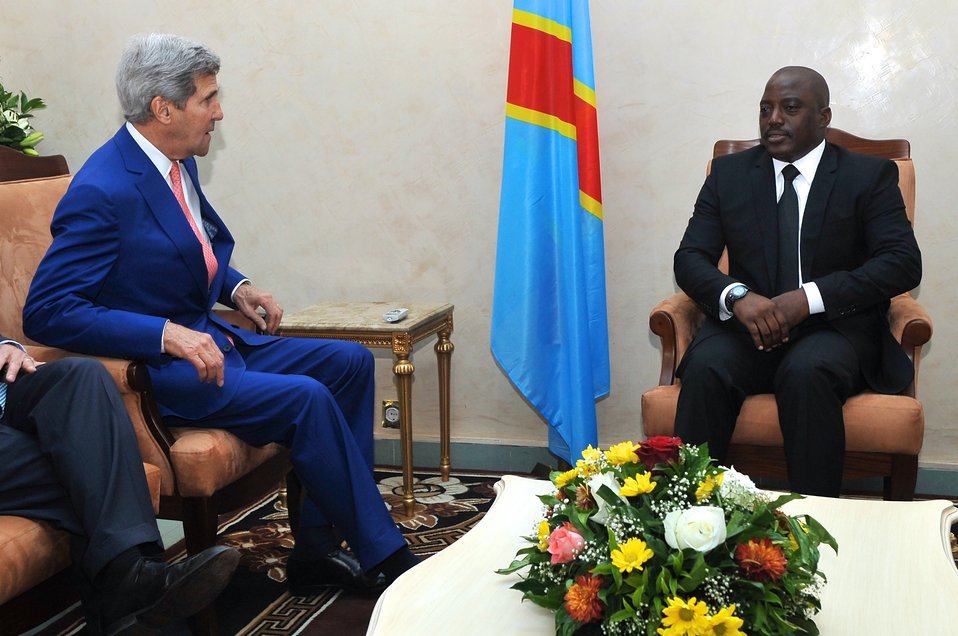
Secretary Kerry Meets With President Kabila in Democratic Republic of Congo

U.S. Secretary of State John Kerry settles into his seat before a bilateral meeting with Democratic Republic of Congo President Joseph Kabila in Kinshasa on May 4, 2014.